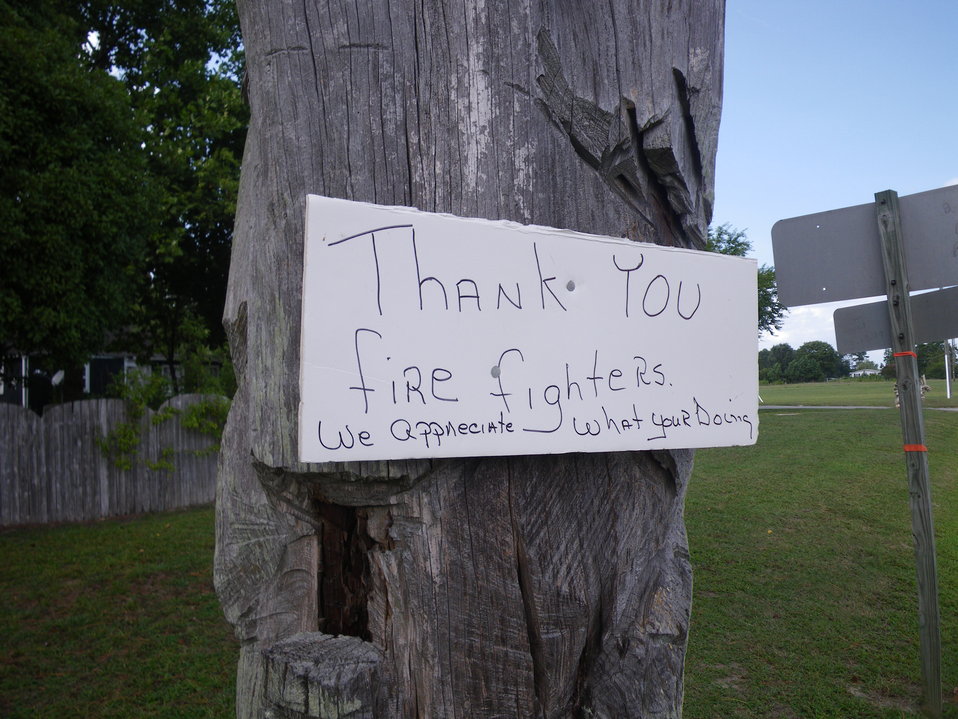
Thank you, firefighters

Suffolk, VA, August 2011. A sign thanking firefighters of the Lateral West Fire is posted near the Virginia/North Carolina border. At the peak of the fire, over 450 firefigthers worked to put out the 6,300-acre fire burning in Great Dismal Swamp.